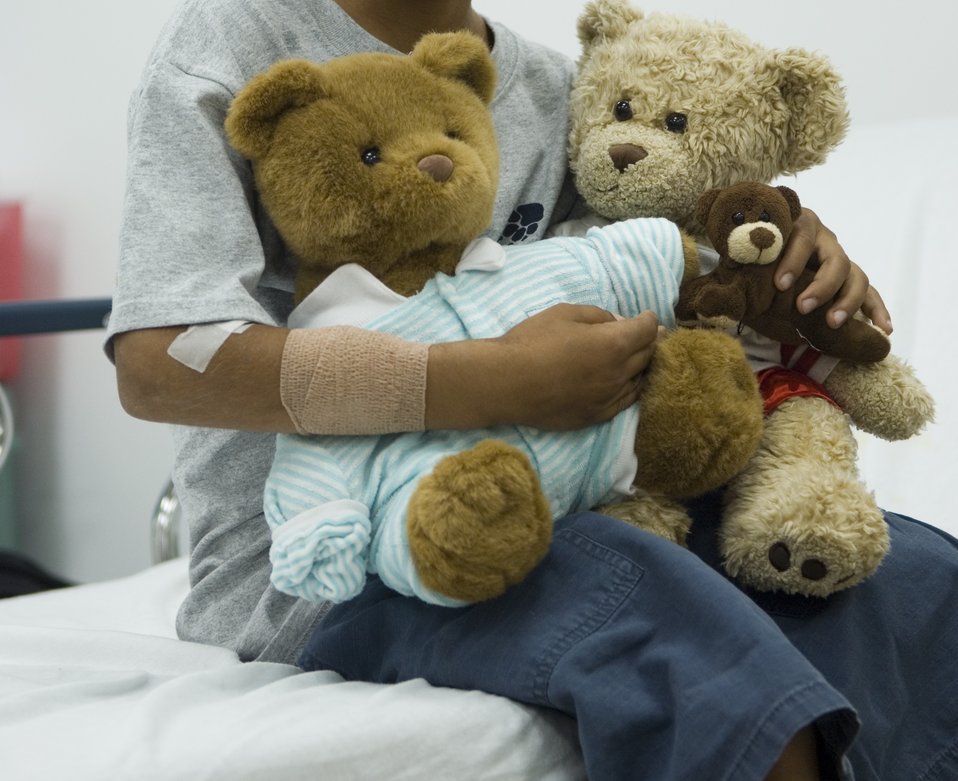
First sergeant gives teddy bears to Iraqi children

An Iraqi child embraces the bears given to him during his recovery at the Air Force Theater Hospital at Balad Air Base, Iraq. Master Sgt. Dave Dunn started